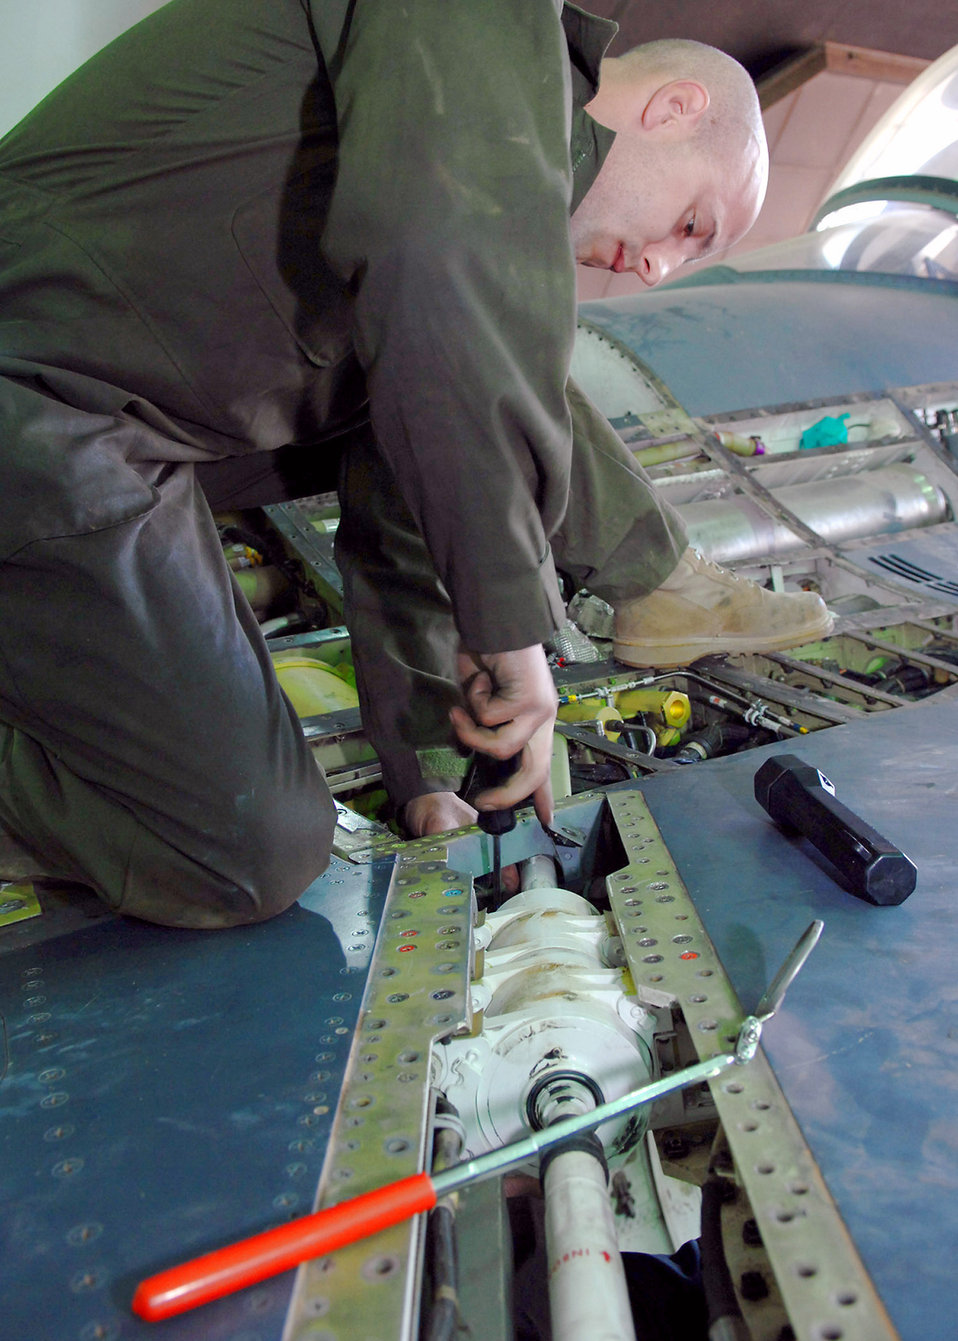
Tune-up time

Tech. Sgt. Robert Fredenberg installs and repositions a clamp to prevent electrical wires from fraying and causing the right leading edge flap malfunctions on an F-16 Fighting Falcon Feb. 22 at Balad Air Base, Iraq. The flaps on the leading edge of the wings of an F-16 assist aircraft movement during slower air speeds. Sergeant Fredenberg is a 332nd Expeditionary Maintenance Squadron crew chief deployed from the Wisconsin National Guard.